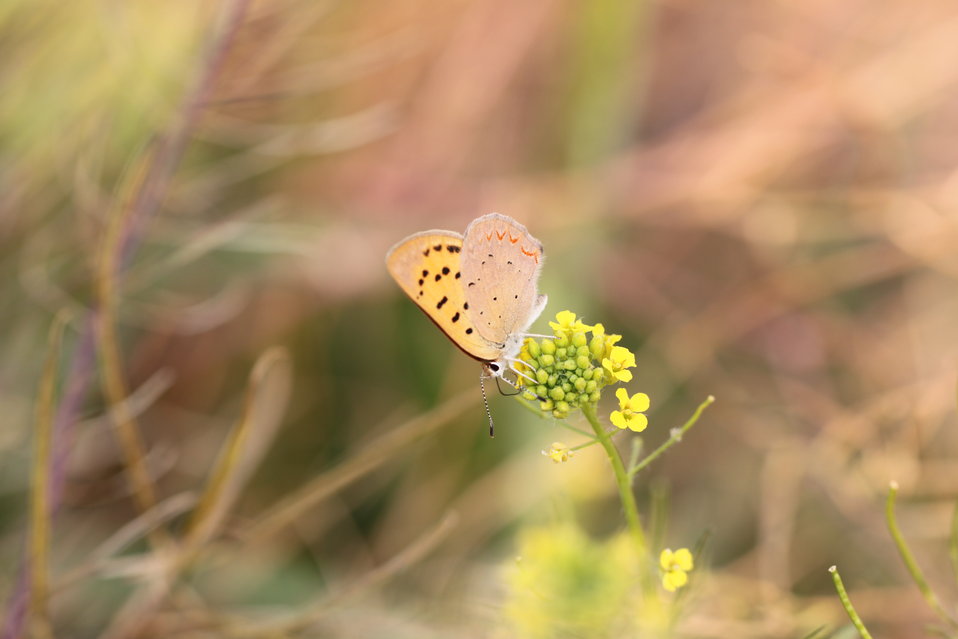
Purplish Copper

Lycaena helloides nectaring in moist soil area of the Refuge.